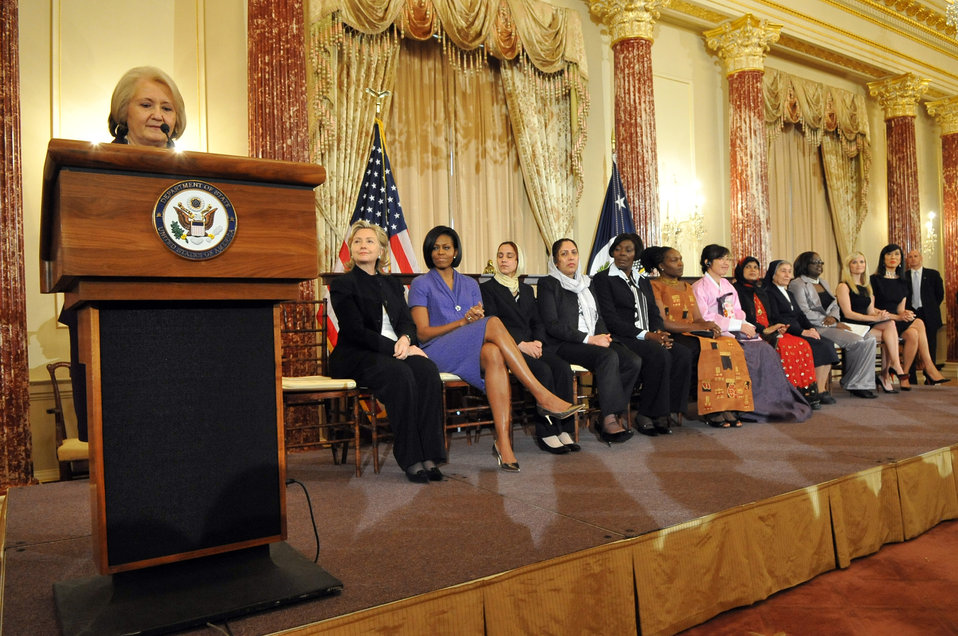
Ambassador-at-Large for Global Women’s Issues Melanne Verveer speaks at the 2010 International Women of Courage Awards at the U.S. Department of State, Washington, D.C. March 10, 2010.